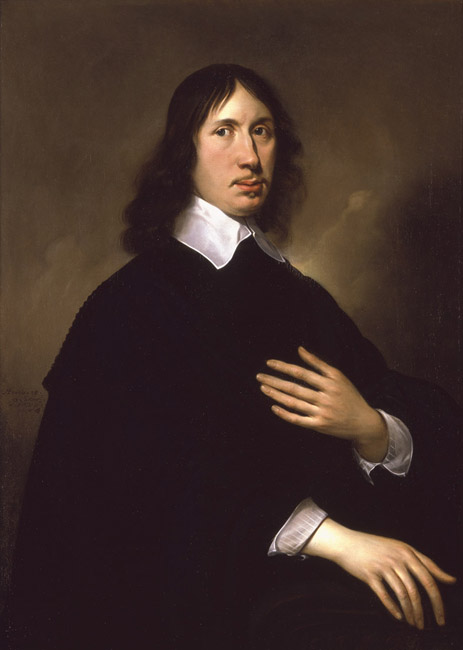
Nederlands: Paulus Lesire, Portret van Willem Craeyvanger, 1651